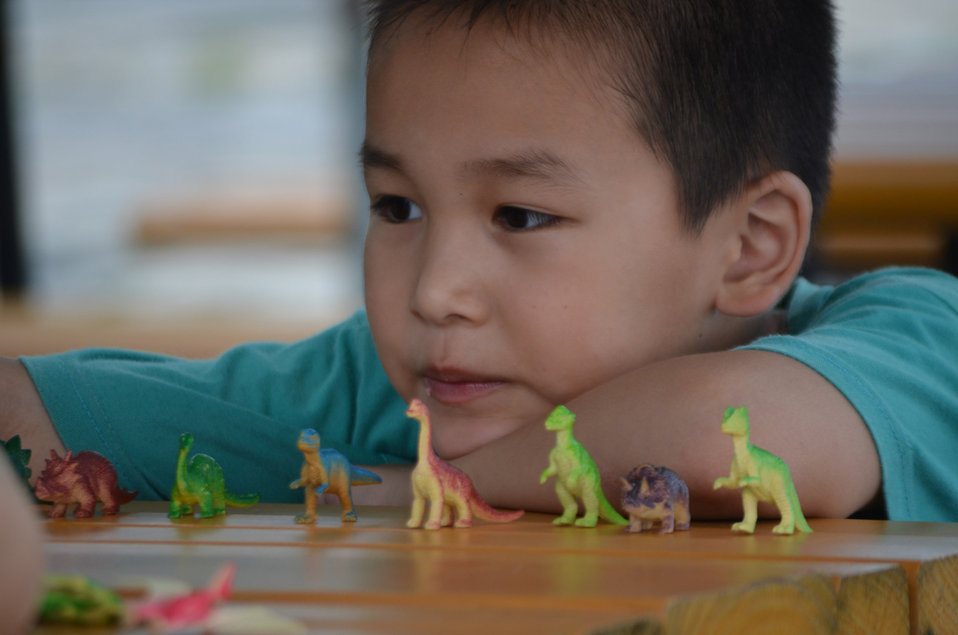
Boy playing

Young boy playing with his treasures.